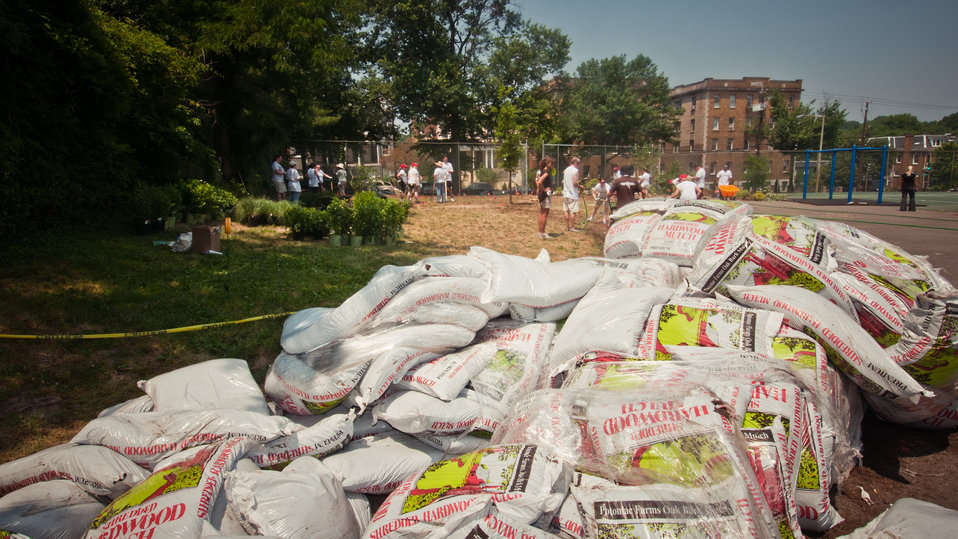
Pallets full of bagged shredded hardwood mulch sit ready to be mixed into fresh plant beds in the People’s Garden, at William B. Powell Elementary School on Thursday, June 9, 2011 in Washington, DC. Volunteers from U.S. Department of Agriculture People’s Garden Executive Master Gardener program and Washington Capitals hockey organization, along with defenseman Jeff Schultz, and mascot Slapshot transformed a grassy corner of the school playground into a habitat garden and outdoor learning area. Executive Master Gardeners led the volunteer project teams. The Washington Capitals donated new tools; tool shed; garden materials; lunch; most of the volunteers and more. The completed projects included a walking path; tiling of garden plots; planting a bird habitat garden, pollinator garden and native grasses; caterpillar and butterfly plaques; hummingbird and bat house, and tool shed. The garden will later include a picnic area, outdoor classroom, hummingbird garden, Monarch watch garden, native bee garden, and birdbath. USDA challenges its employees to establish People's Gardens at USDA facilities worldwide or on this case, help communities create gardens. People's Gardens vary in size and type, but all have a common purpose - to help the community and the environment.